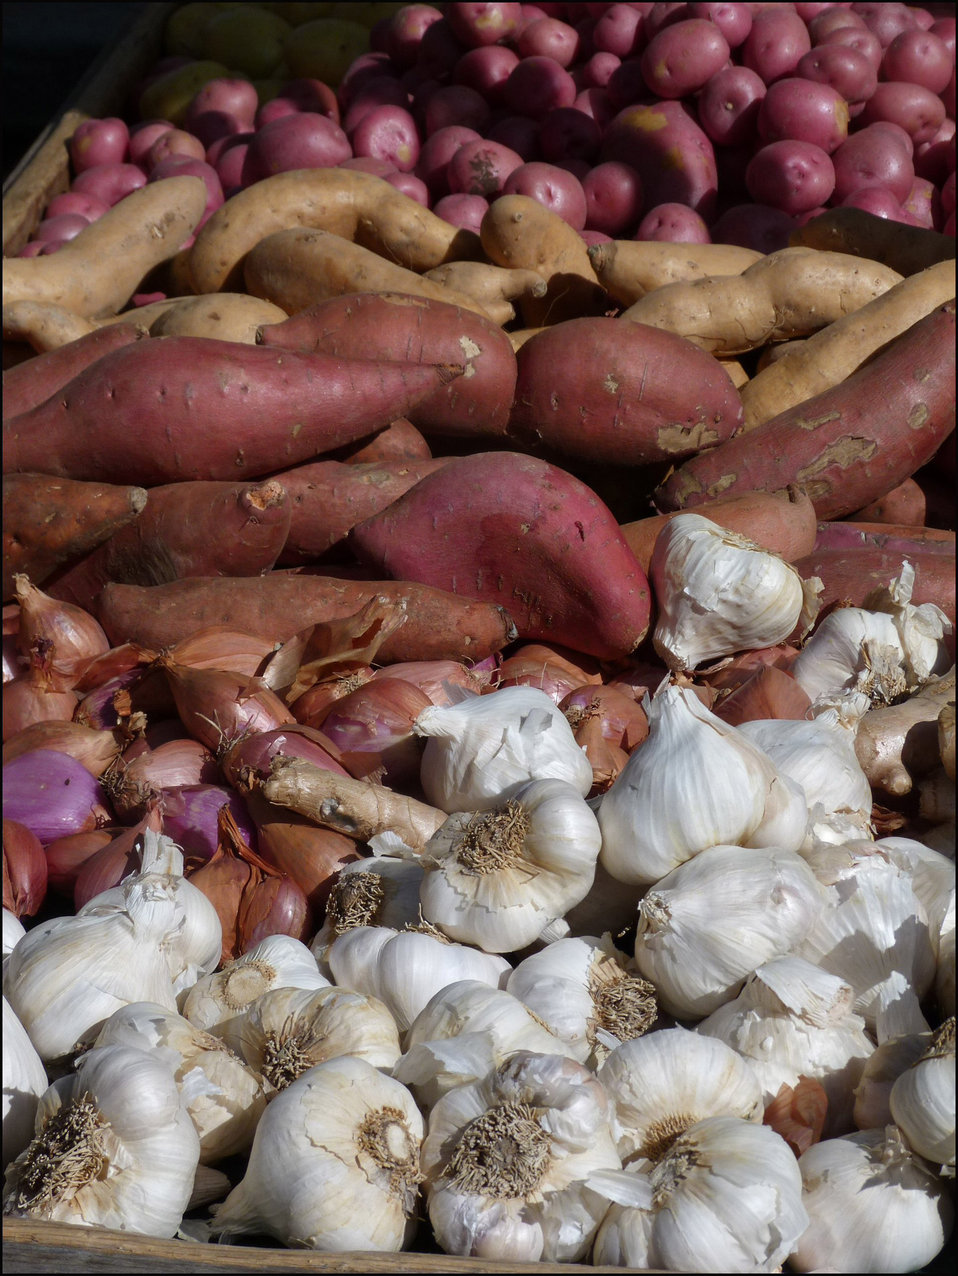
Mixed produce; garlic, yams, potatoes.